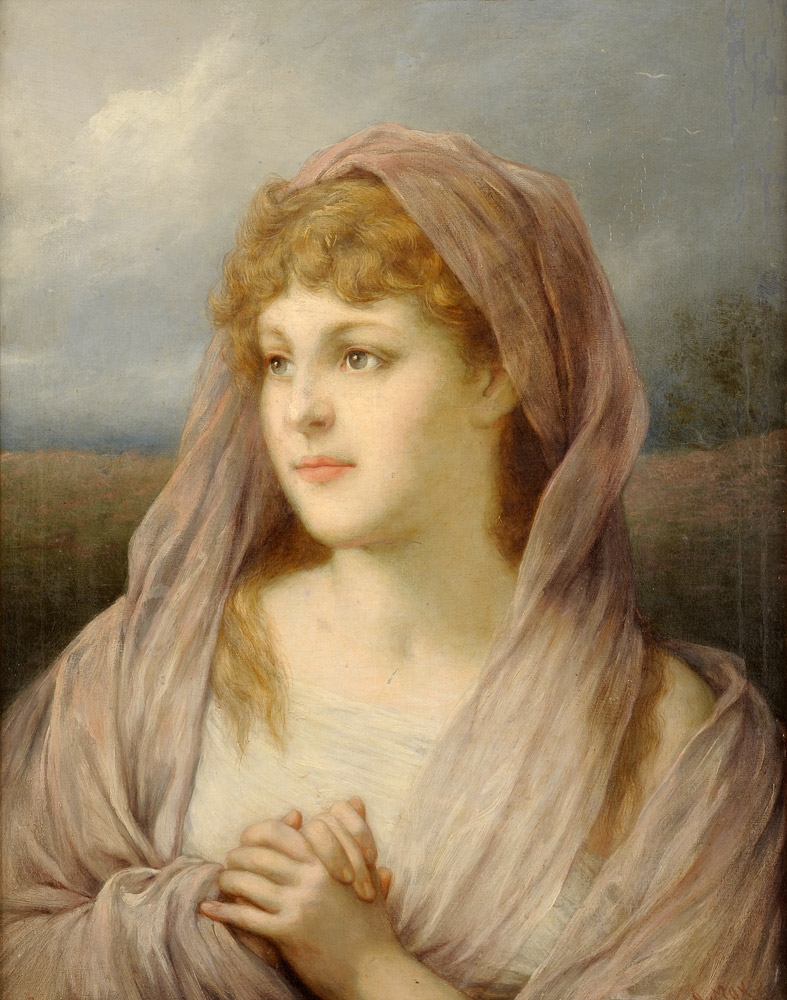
Blonde Schönheit mit Seidenschleier. Signiert. Öl auf Leinwand, 62 x 46 cm